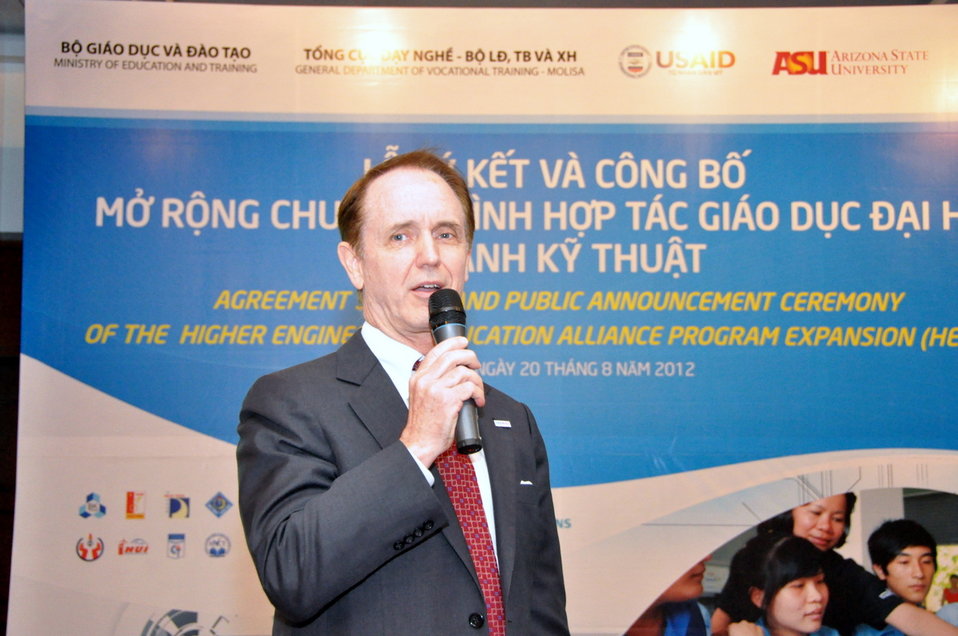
USAID Mission Director Francis Donovan at the Higher Engineering Education Alliance Program Expansion Launch

Hanoi, August 20, 2012.